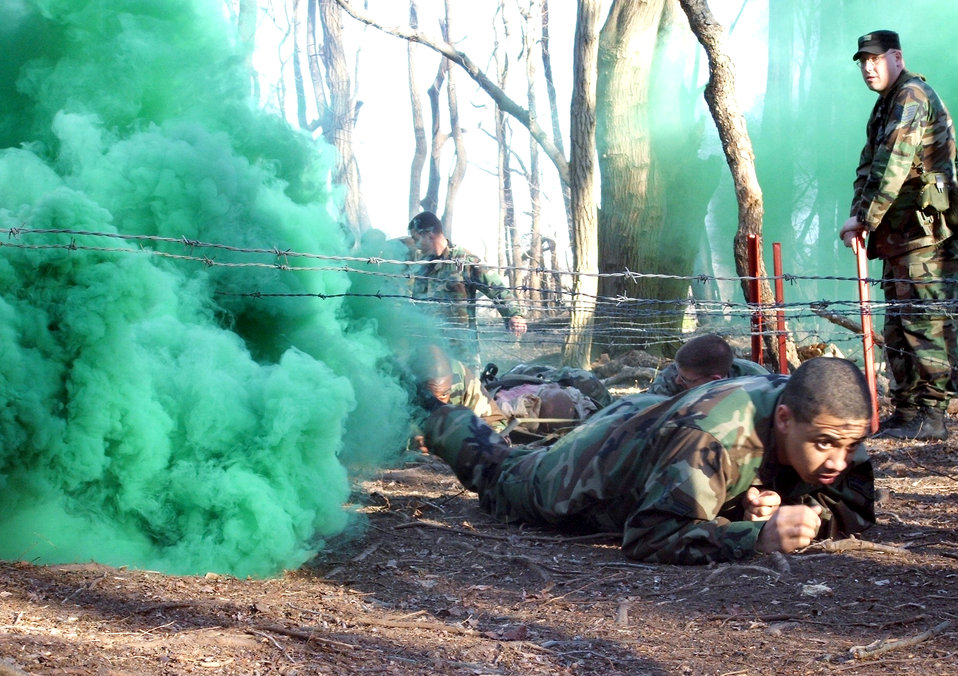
Phoenix Raven

Airman 1st Class Brian Conlee crawls under wire during combat first aid training at the Air Force Phoenix Raven Course 06-D on Monday, March 27, 2006, at Fort Dix, N.J. The students include Air Force security forces and U.S. Navy masters at arms personnel. They are trained in combat first aid, tactical self defense and aircraft security and undergo extensive physical training. The course is taught by the Air Mobility Warfare Center's 421st Combat Training Squadron. Airman Conlee is with the 62nd Security Forces Squadron at McChord Air Force Base, Wash.